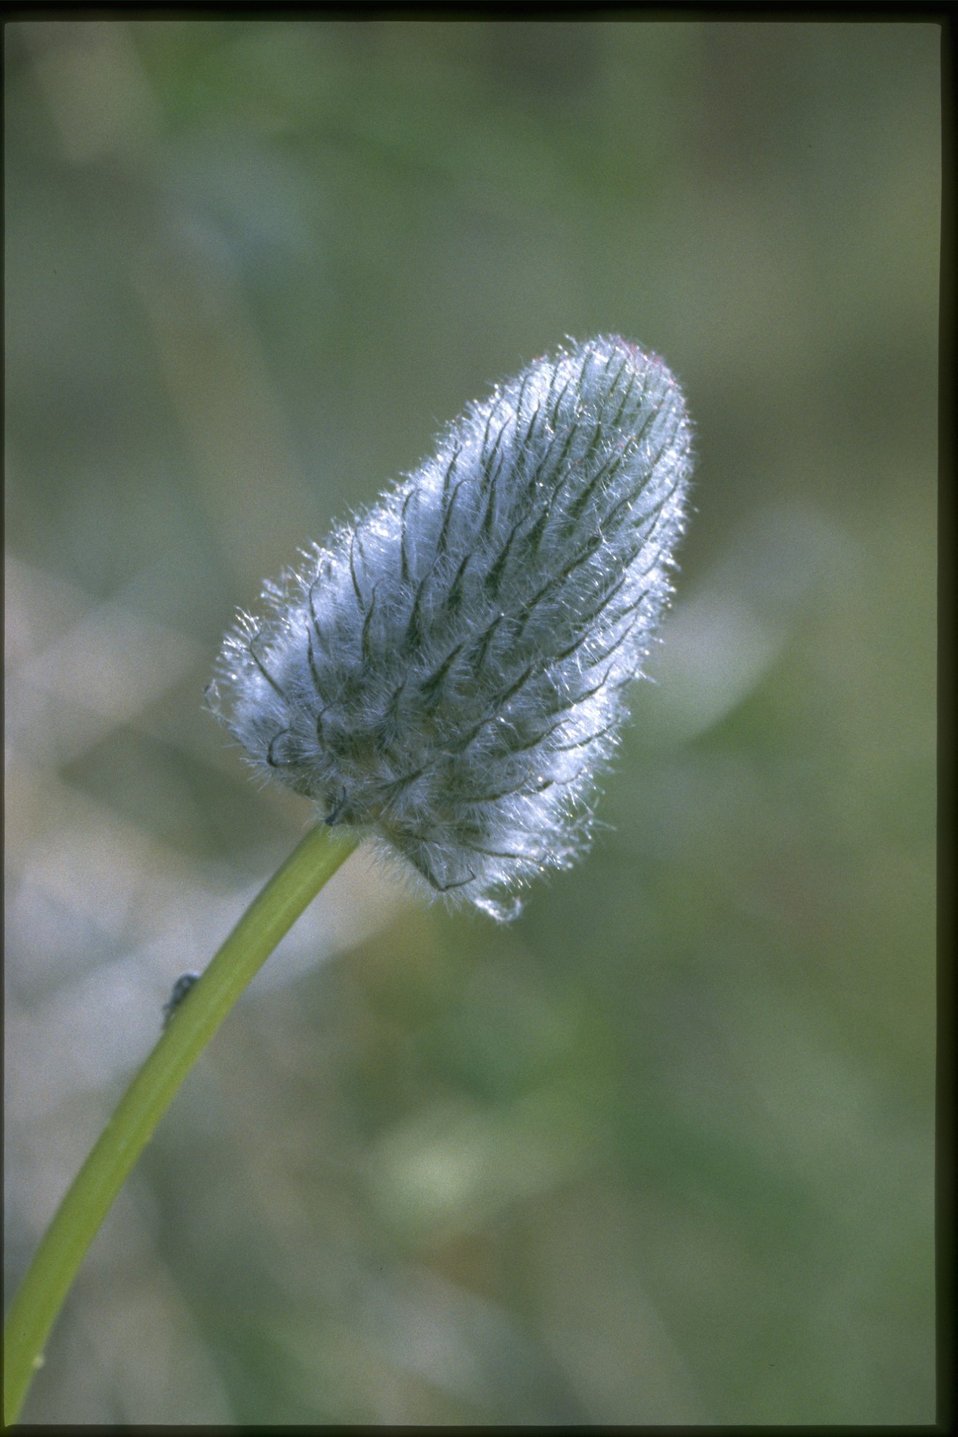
Closeup shot of Trifolium.